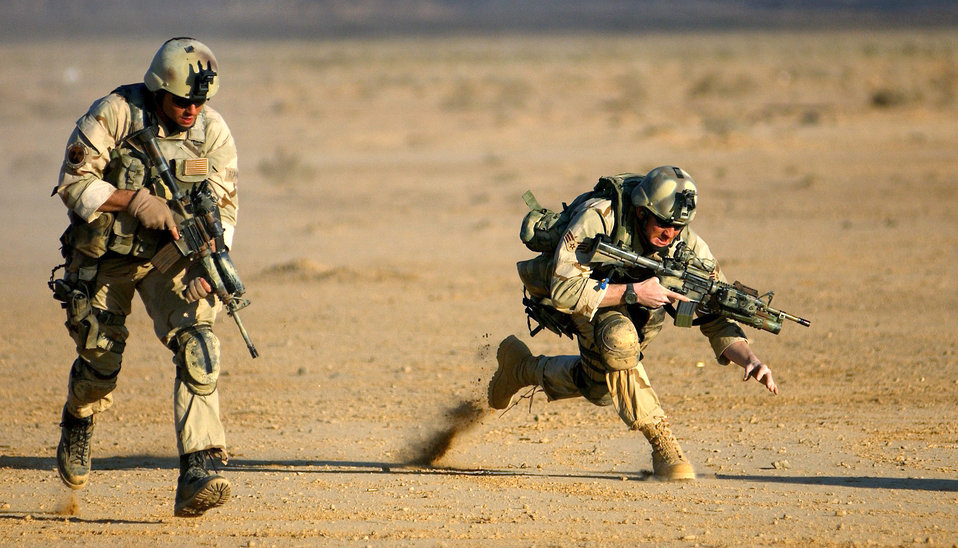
Combat Controllers

OPERATION ENDURING FREEDOM -- Combat controllers practice firing movements on the range at a forward-deployed location supporting Operation Enduring Freedom. Air Force combat controller teams are trained to conduct and support special operations under clandestine, covert or low-visibility conditions.